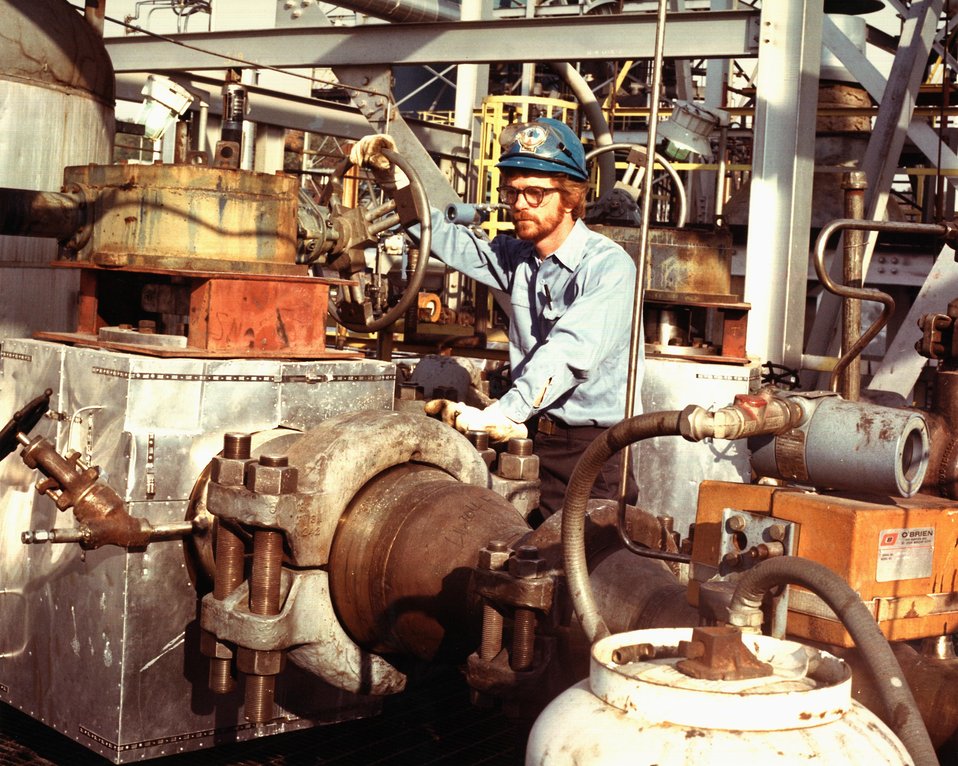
WORKER CHECKS EQUIPMENT AT THE 95 PERCENT COMPLETED H-COAL PILOT PLANT